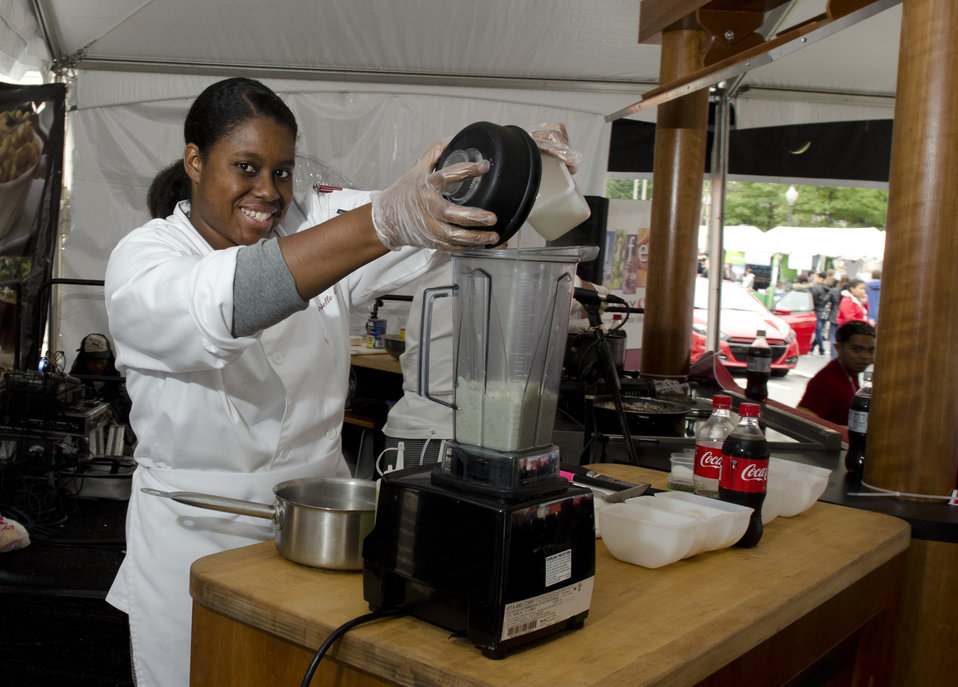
Stratford University culinary students Danielle Shell prepares a culinary sample at the Taste of D.C., event that highlights more than 70 eateries, 30 specialty beer providers, the United Service Organization (USO) Metropolitan Washington, and live bands. It is anticipated that more than 500,000 people will attend over the course of the three-day event, which extends from the White House to the Capitol, along Pennsylvania Ave. in Washington D.C. on Sunday, October 7, 2012.